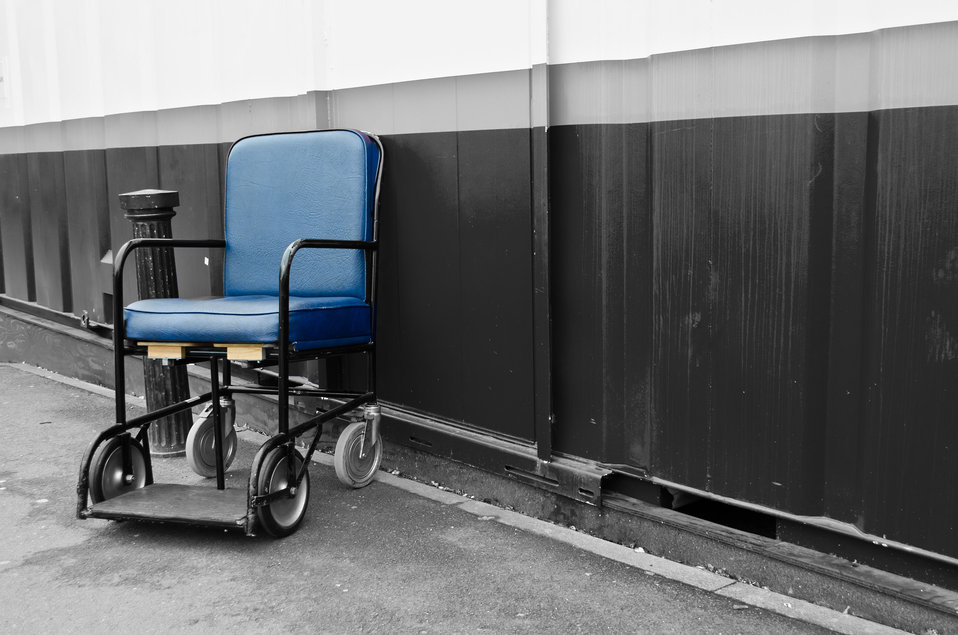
Wheelchair.